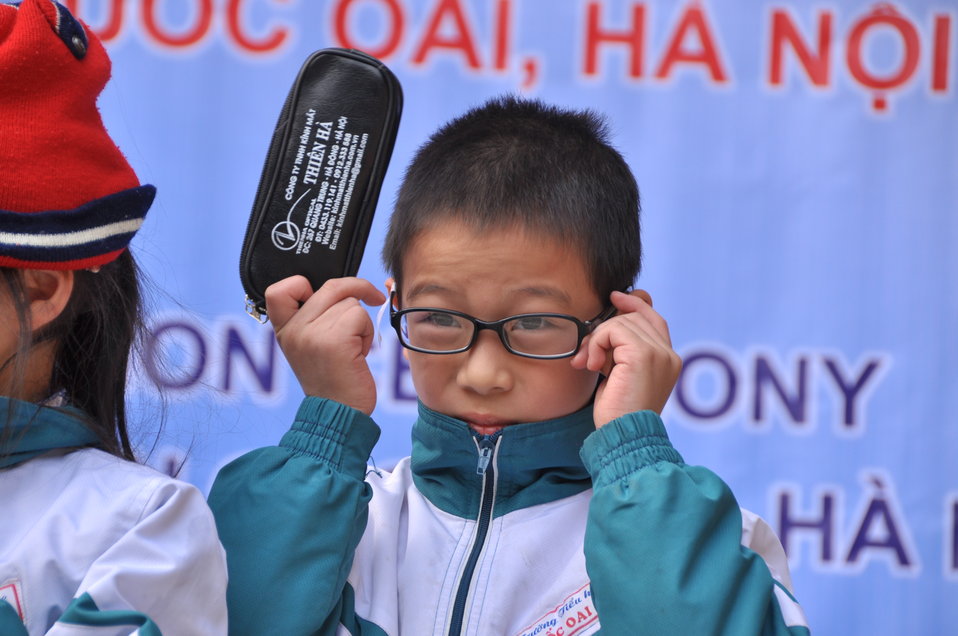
USAID supports distribution of eyeglasses to pupils and teachers in Quoc Oai, Hanoi.

Kieu Phu Junior Secondary School, Quoc Hoai, Hanoi, December 23, 2013.